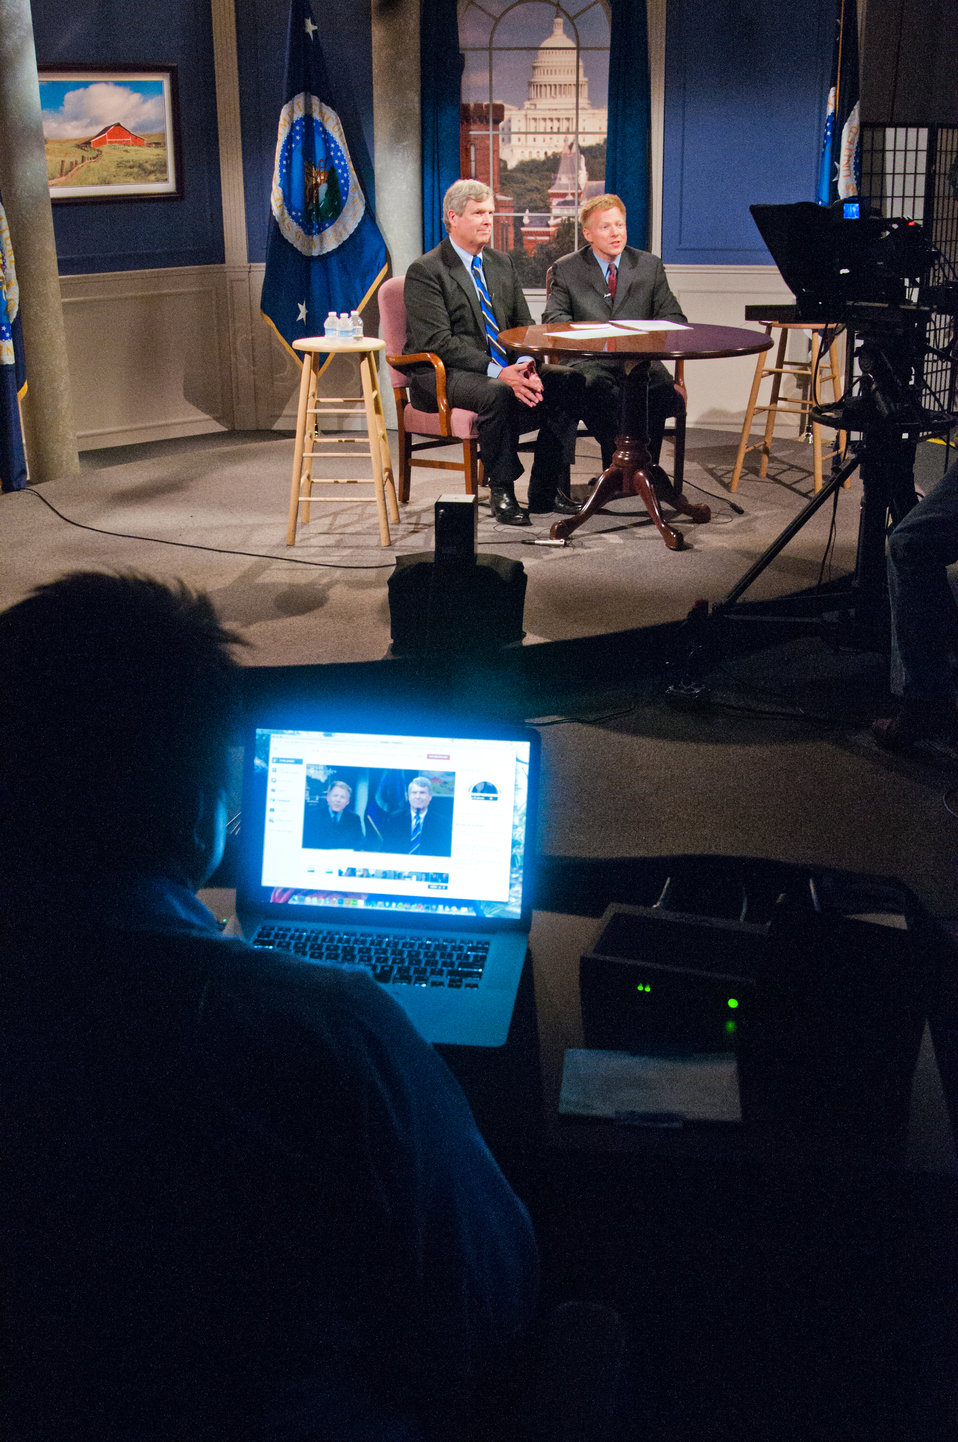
Agriculture Secretary Tom Vilsack and U.S. Department of Agriculture (USDA) StrikeForce Initiative Director Max Finberg participate in a Google Hangout to discuss StrikeForce opportunities, success stories and ways communities may get involved at USDA in Washington, D.C. on Monday, Jun. 17, 2013. The StrikeForce Initiative targets rural areas of persistent poverty where USDA staff can work with state, local and community officials to increase awareness of programs and services that help to promote economic development and job creation.